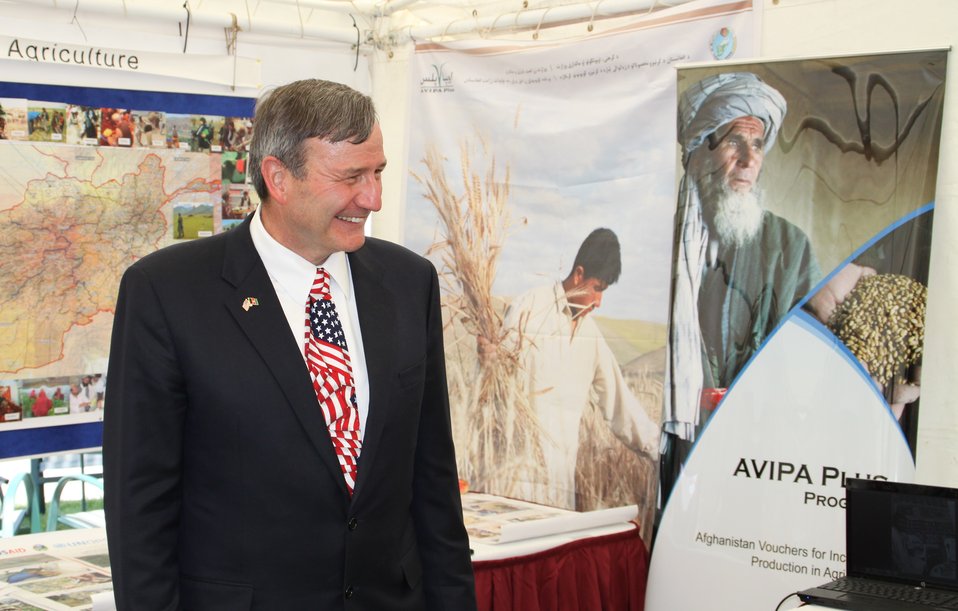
Kabul Official July 4th Celebration